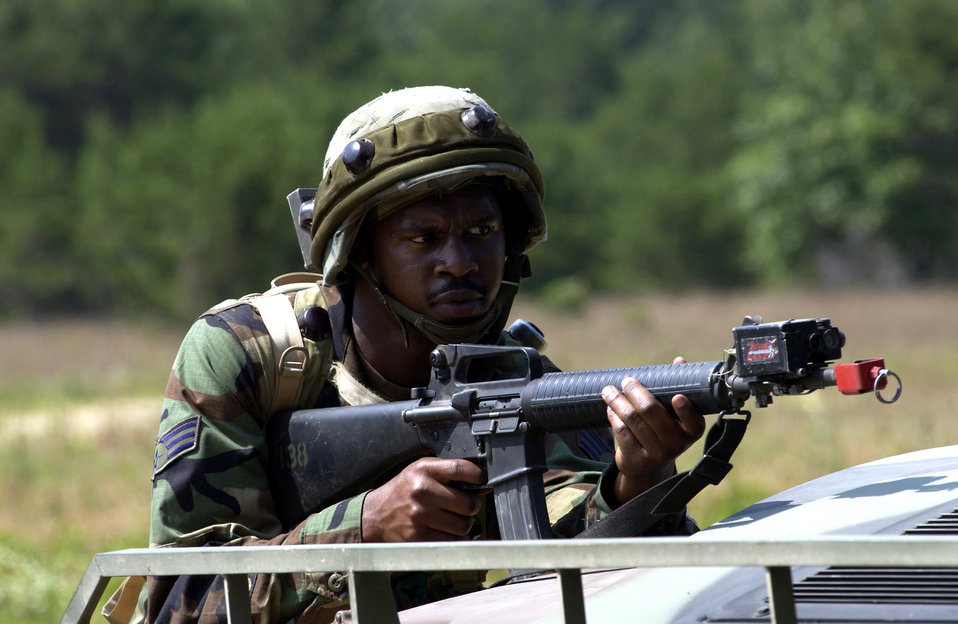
Patriot

FORT MCCOY, Wis. -- Senior Airman Dahron Sutton defends his position after a simulated convoy attack during the Patriot exercise on July 15. Patriot is one of the largest annual exercises held across the United States, combining the National Guard, reserve, and active components of the Air Force and Army. Additionally, Canadian, United Kingdom, and Dutch forces are participating, increasing combined effectiveness.